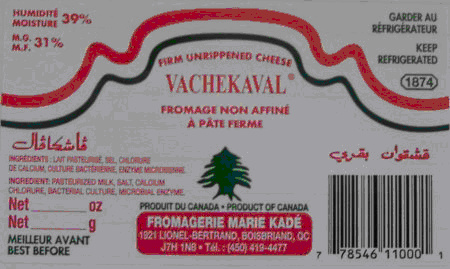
RECALLED - Cheese

December 29, 2011 - Consumer Alert for cheese and milk products due to Listeria monocytogenes contamination.